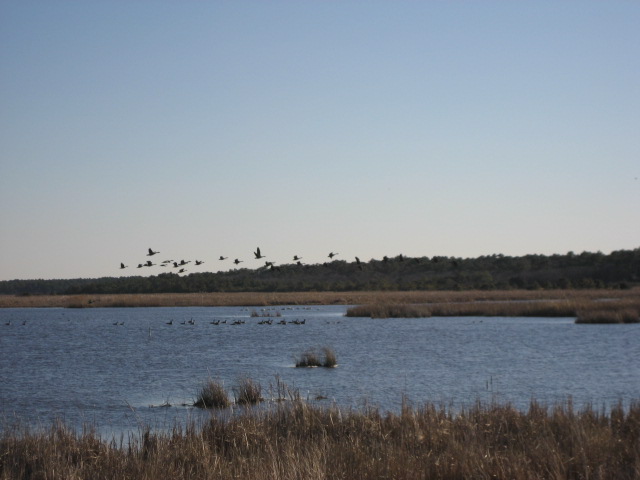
Back Bay National Wildlife Refuge in Virginia.